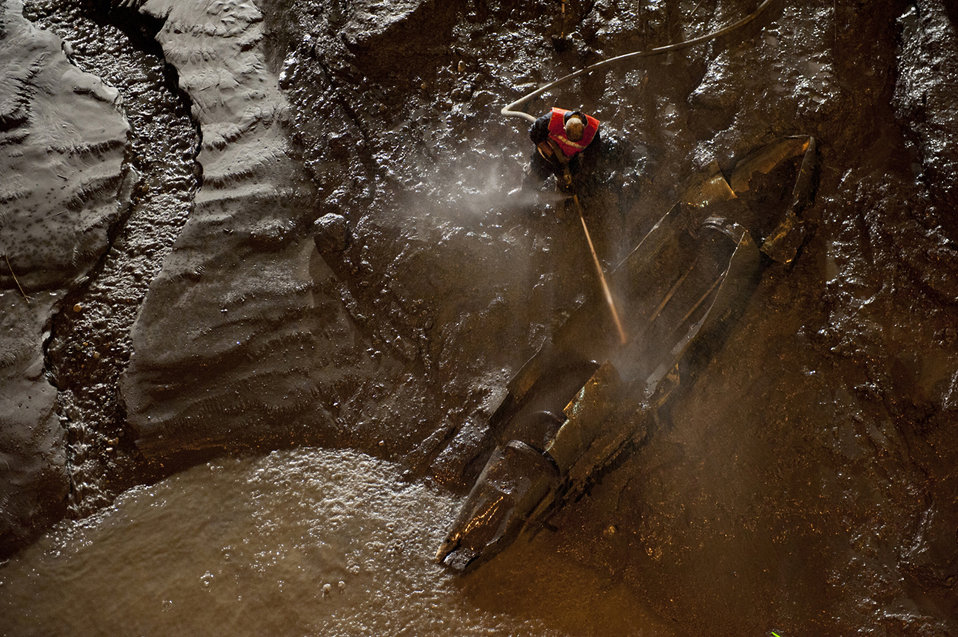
Phantom in the water

Tech. Sgt. Richard Hittie uses a high-pressure hose to clear the silt that has built up inside a jettisoned F-4 Phantom II fuel tank at the Port of Anchorage, Alaska, Sept. 18, 2012. Joint Base Elmendorf Richardson and the Port of Anchorage worked together to safely remove the external fuel tank, which was discovered earlier by Port personnel.